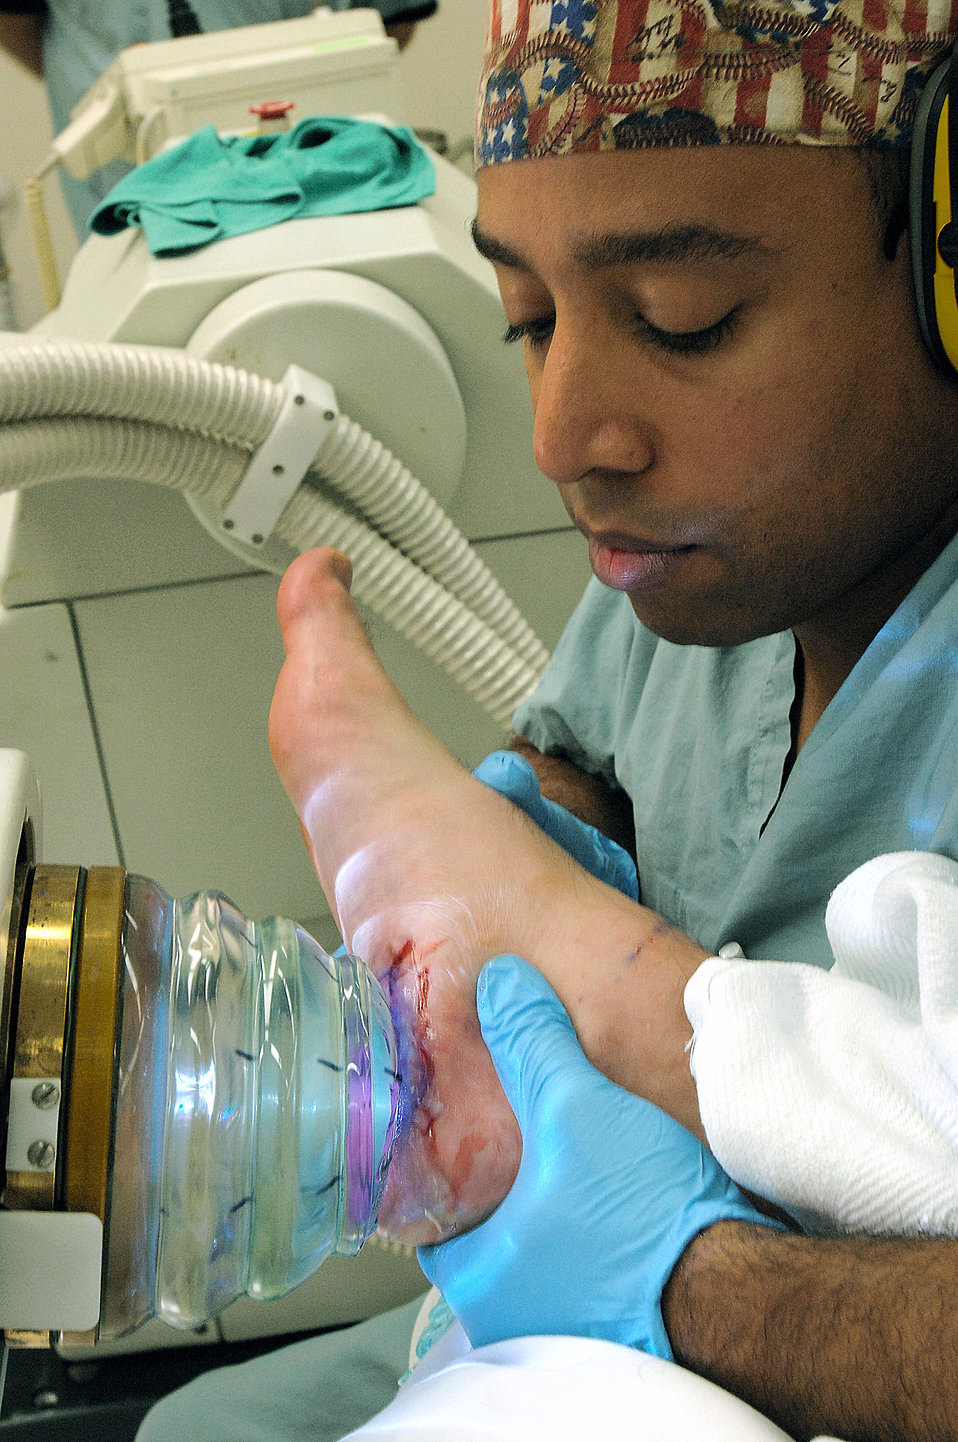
Podiatric Surgery

Capt. Hjalmar Contreras, 59th Orthopedic and Rehabilitation Squadron, performs an Ossatron procedure March 14 on a patient at Wilford Hall Medical Centerat Lackland Air Force Base, Texas. Captain Contreras is the chief of podiatric surgery and spearheaded a new procedure to treat severe plantar fasciitis that requires less recovery time for patients.